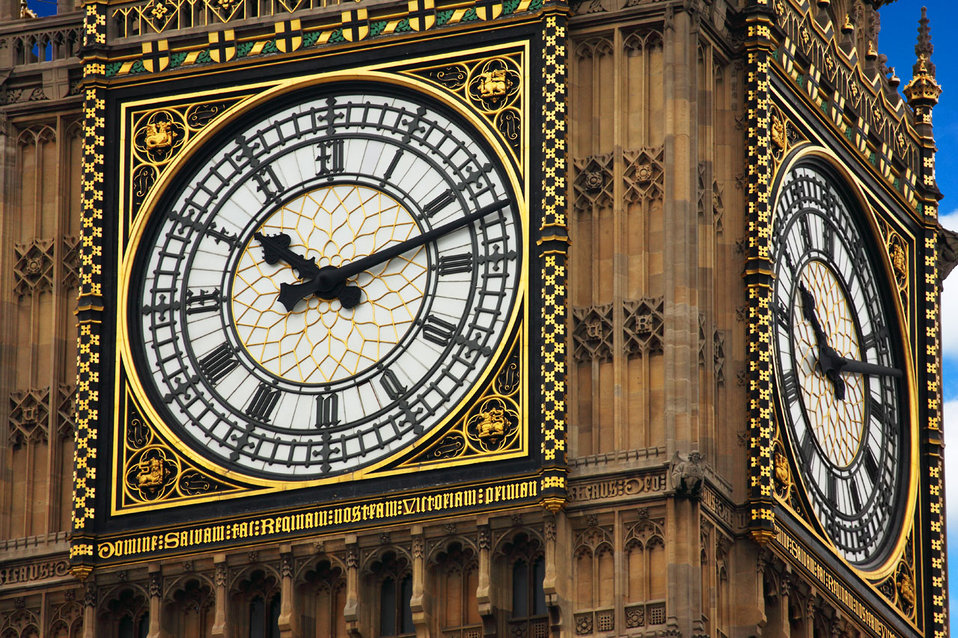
Big ben clockface

Closeup photo of big ben clock in london.